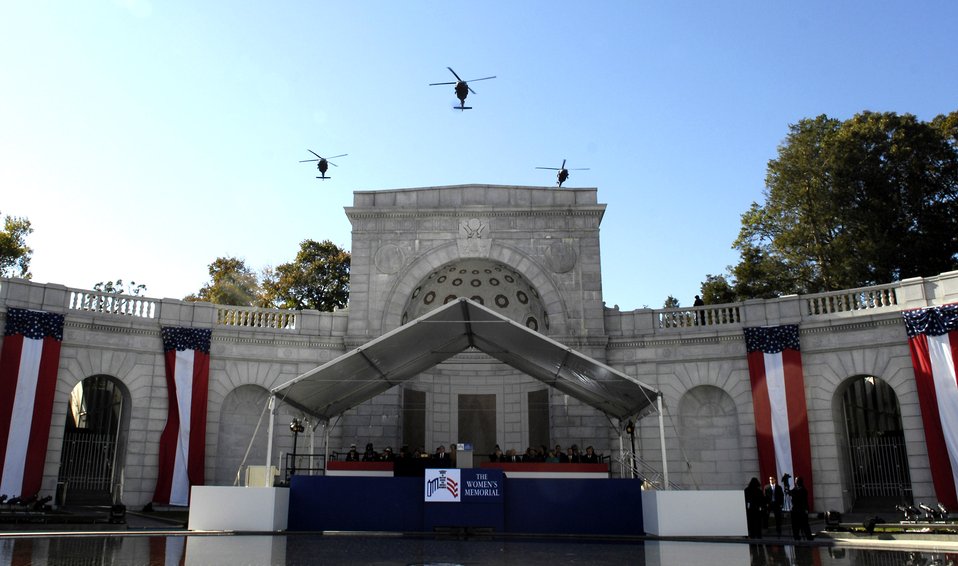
10th anniversary of WIMSA

U.S. Army helicopters fly overhead during the ceremony Nov. 3 celebrating the 10th anniversary of the Women in Military Service for America Memorial at Arlington National Cemetery. The helicopter pilots were all female and assigned to the 12th Aviation Battalion at Fort Belvoir, Va.